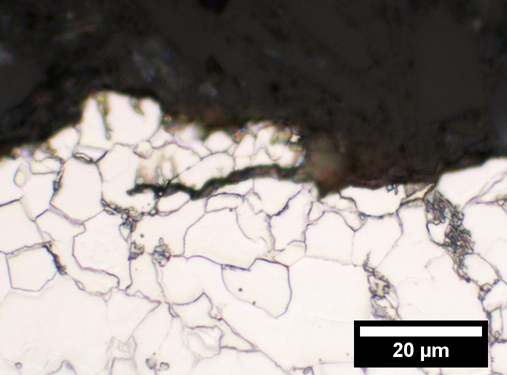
Ethanol-Loving Bacteria

Micrograph of crack in X52 steel after the sample was subjected to mechanical forces for several days in an ethanol solution containing acid-producing bacteria, 'Acetobacter aceti>. Researchers at NIST's biofuels testing facility found that the bacteria increased fatigue crack growth rates at least 25-fold compared to what would occur in air.